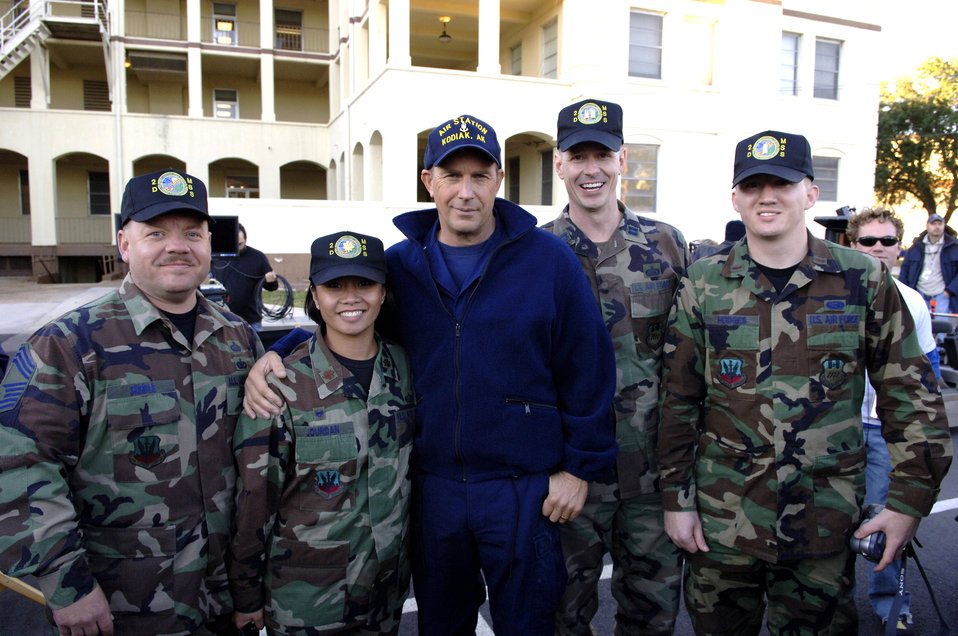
Barksdale lends helping hand in filming movie

BARKSDALE AIR FORCE BASE, La. (AFPN) -- Kevin Costner poses with Maj. Rose Jourdan, commander of the 2nd Mission Support Squadron, and her staff during a break in filming the movie